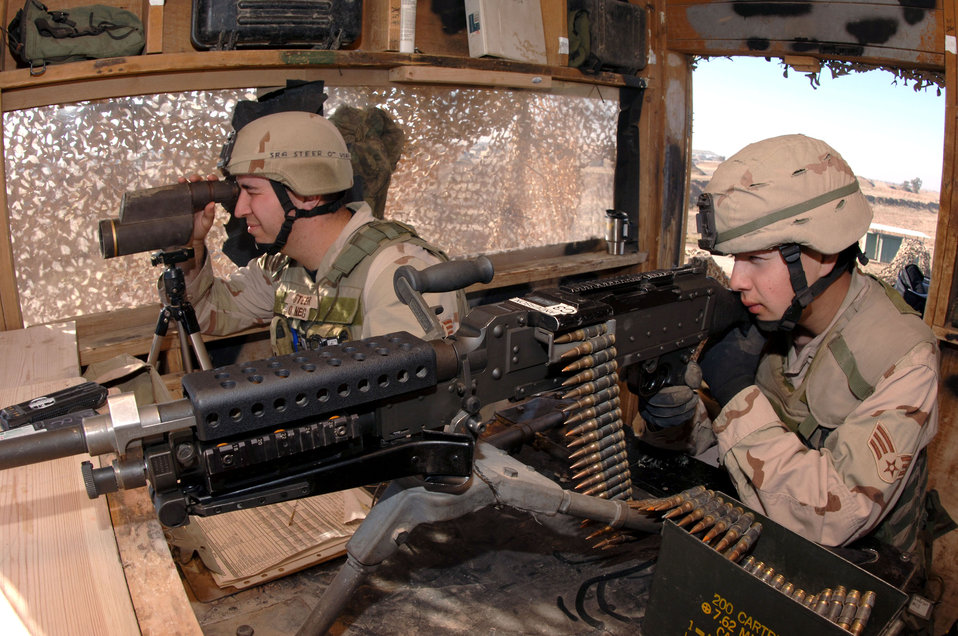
Guarding the perimeter

Senior Airman Mathew Steer and Senior Airman Richard Rodriguez monitor vehicles closely Jan. 24 at an entry control point at Kirkuk Regional Air Base, Iraq. Both are Kirkuk Air Base perimeter guards for the 506th Expeditionary Security Forces Squadron.